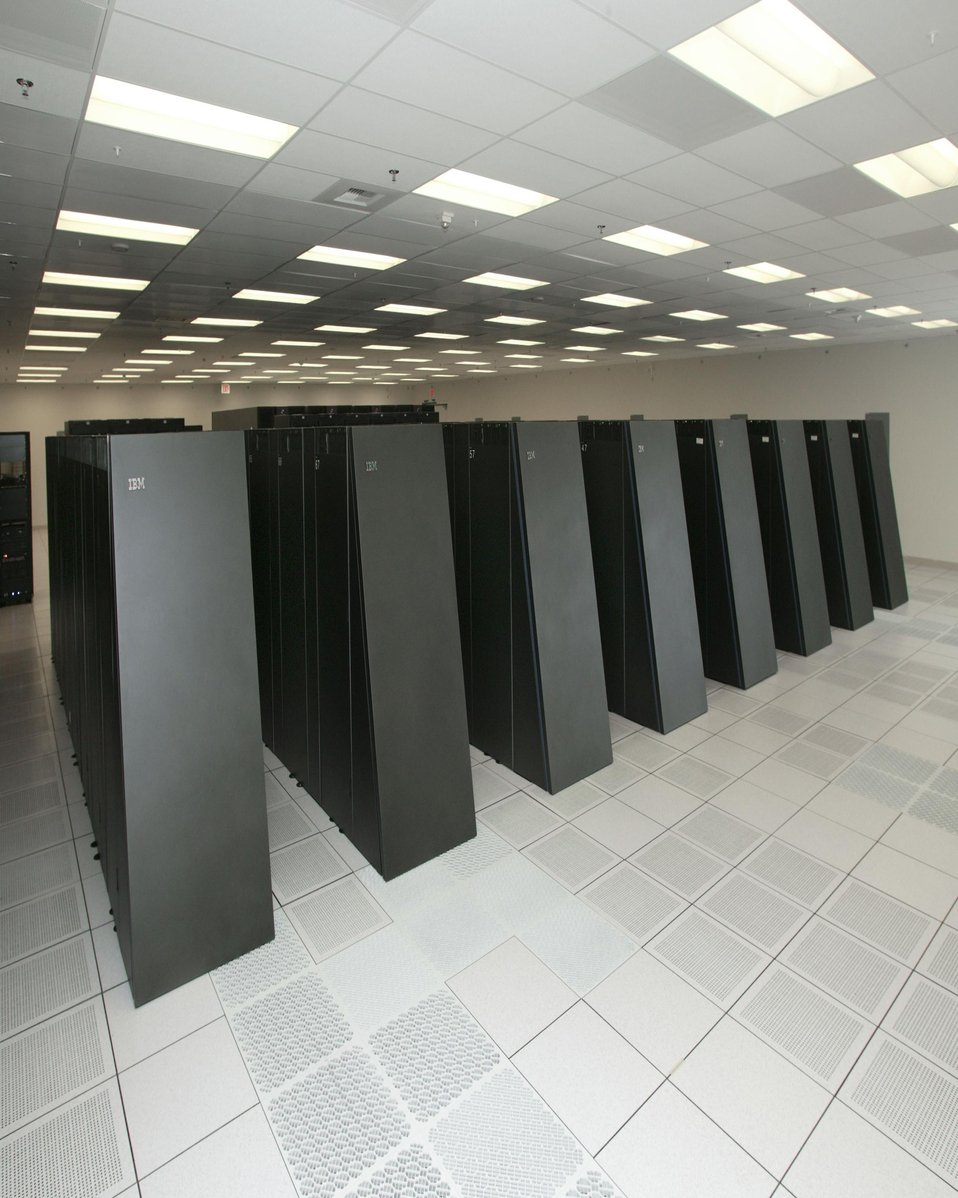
BLUEGENE/L SUPERCOMPUTER AT LAWRENCE LIVERMORE NATIONAL LABORATORY WILL BE USED TO IMPROVE THE ABILITY TO PREDICT THE BEHAVIOR OF THE NUCLEAR STOCKPILE AS IT AGES.

THE ASC PROGRAM AT LLNL HAS TWO NEW, NEXT GENERATION SUPERCOMPUTERS, BLUEGENE/L AND PURPLE, THAT WILL HELP THE U.S. NUCLEAR WEAPONS PROGRAM STOCKPILE REMAIN SAFE AND RELIABLE WITHOUT NUCLEAR TESTING. BOTH MACHINES ARE LOCATED AT THE LLNL. THE DATA GATHERED FROM MATERIALS AGING CALCULATION TO BE RUN ON BLUEGENE/L WILL BE VITAL TO THE CREATION OF IMPROVED MODELS TO BE USED FOR FUTURE WEAPONS PERFORMANCE SIMULATION ON PURPLE.